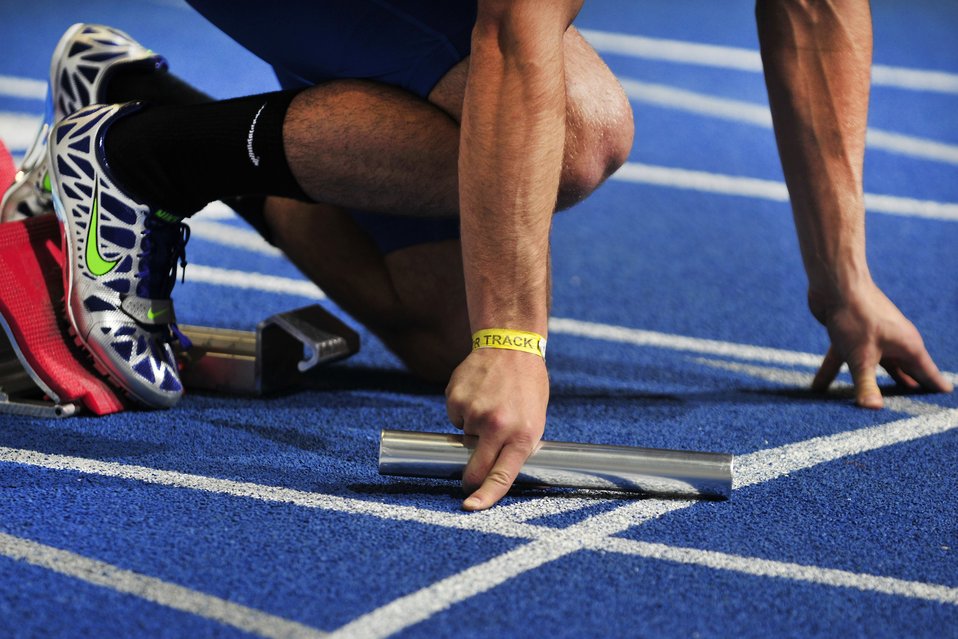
Falcons Set Records

Junior Brice Bergman prepares to start the men's 4x400-meter relay during the annual Air Force All-Comers Meet Jan. 14, 2011, at the Cadet Field House. The Falcons 4x400-meter relay team finished first among collegiate teams and second overall with a time of 3:15.59.